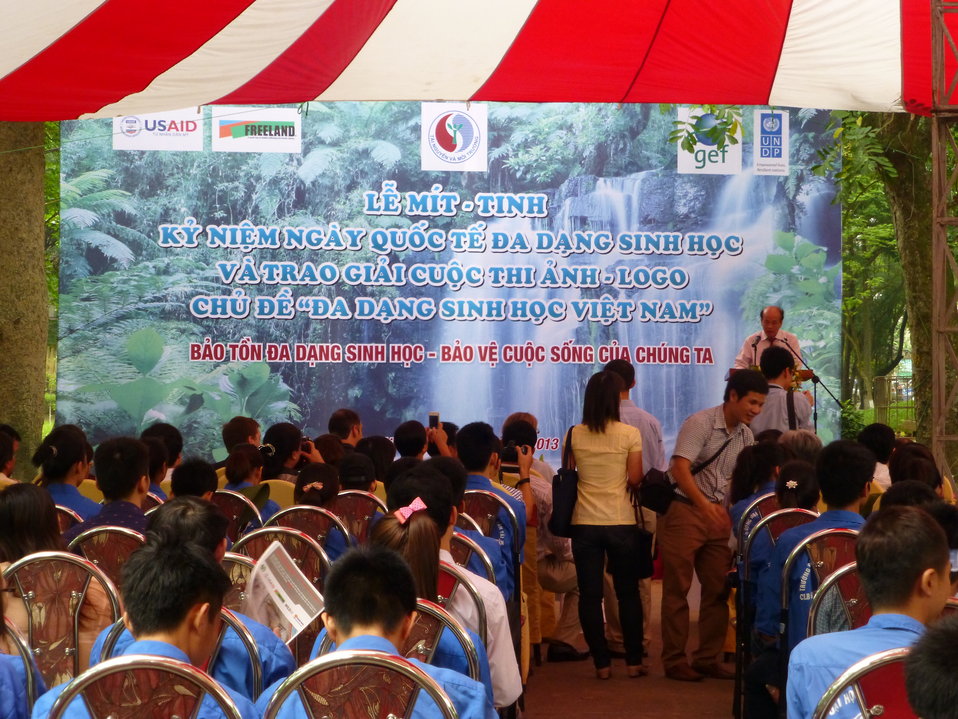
USAID Supports International Day for Biological Diversity in Hanoi